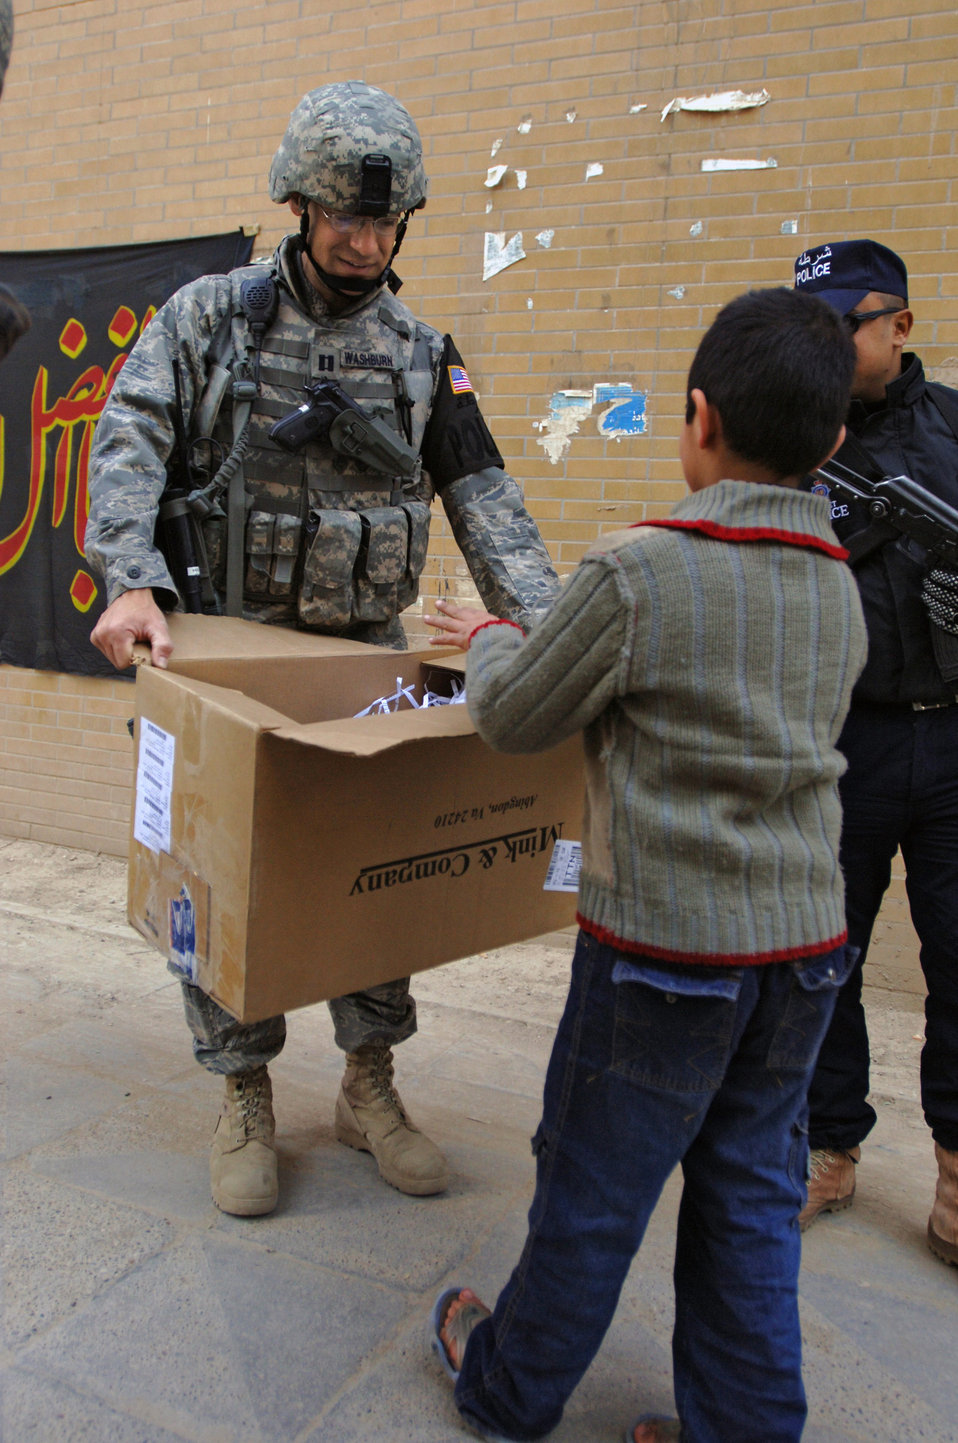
Airmen foster community relations in International Zone

Capt. Ben Washburn hands out toys, school supplies and clothes while on foot-patrol in an apartment complex Jan. 10 in the International Zone of Baghdad, Iraq. The items were gathered by a group of volunteer servicemembers at Joint Base Balad, Iraq, called the Kids of Iraq. The items come from donators in the United States. Captain Washburn is the 732nd Expeditionary Security Forces Squadron Det. 4 operations officer. He is deployed from Vogelway, Germany, and is a native of Colorado Springs, Colo.